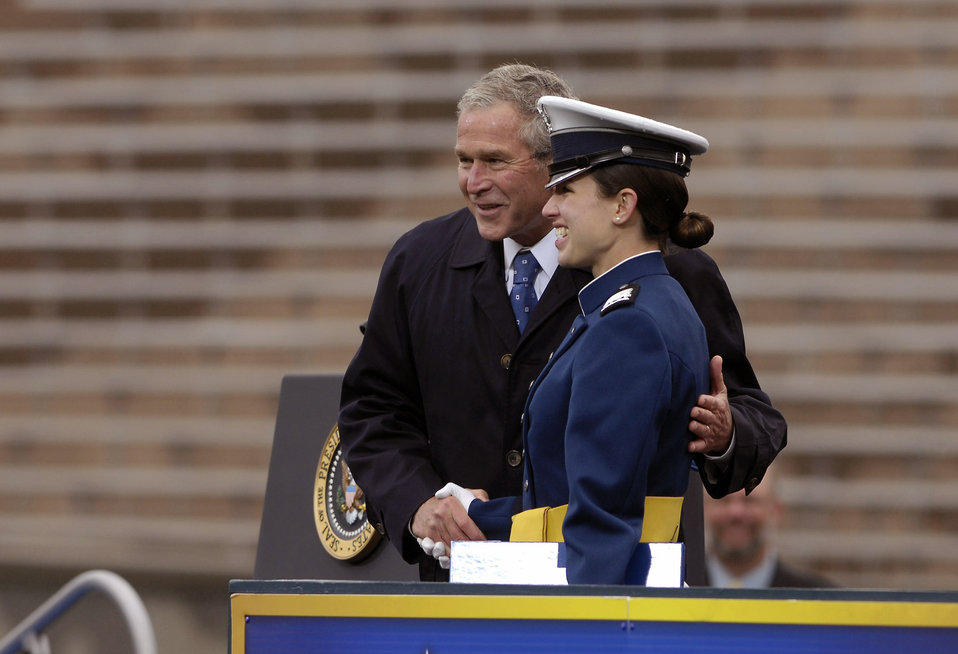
Academy Class of 2008 graduates

President George W. Bush congratulates newly-graduated 2nd Lt. Hila Levy during the U.S. Air Force Academy Class of 2008 Graduation Ceremony May 28 at Falcon Stadium. Lieutenant Levy is the top graduate in her class and was selected as a Rhodes Scholar. The Class of 2008, the 50th Academy class, comprised 1,012 cadets who will enter the Air Force as second lieutenants.